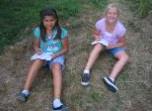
EE Journaling